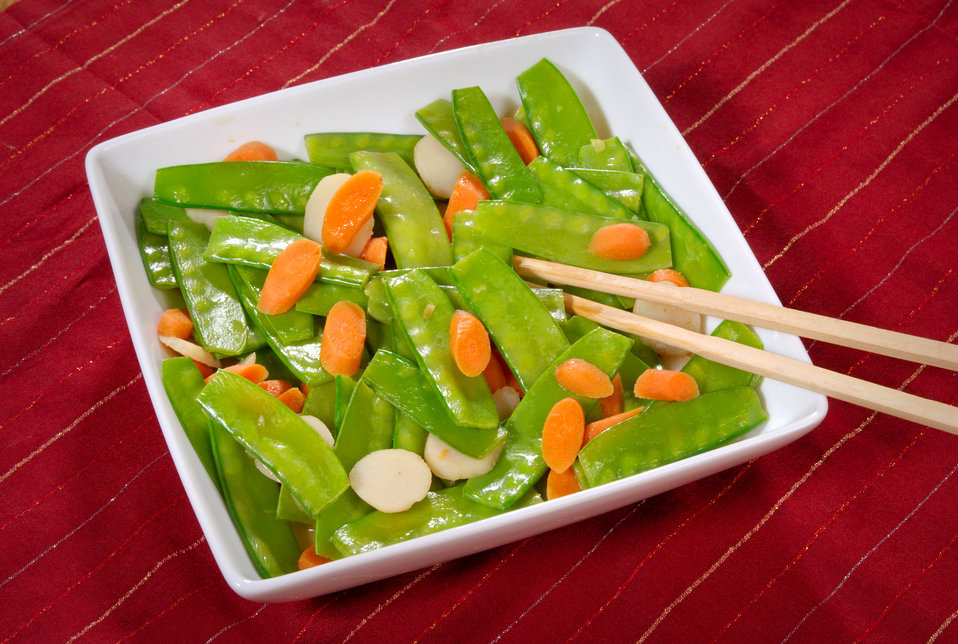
This image depicts a dish of Asian Snow Peas, the recipe to which may be downloaded by way of the link below. The ingredients include snow peas, sesame oil, carrots, water chestnuts, low-sodium chicken broth, low-sodium soy sauce, and a touch of cornstarch.